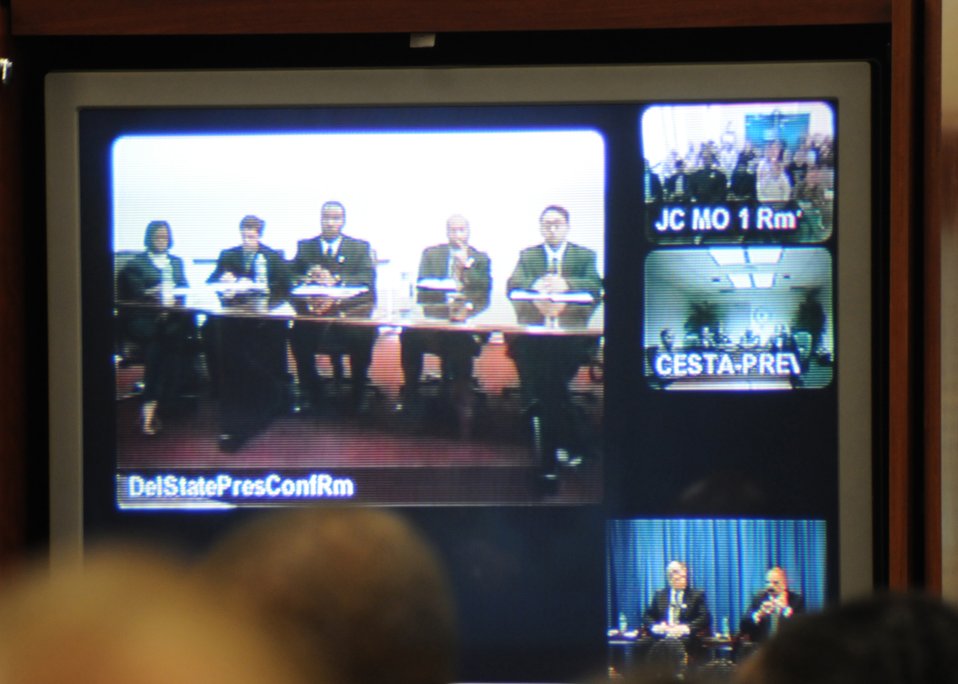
Agriculture Secretary Tom Vilsack and Attorney General Eric Holder hold a teleconference with 1890’s Land Grant Colleges and Universities at Alabama A & M University in Normal, AL., on Friday, May 21, 2010. Participating in the teleconference were Delaware State, Florida A & M, and Lincoln University of Missouri. USDA photo 10di1362-65.